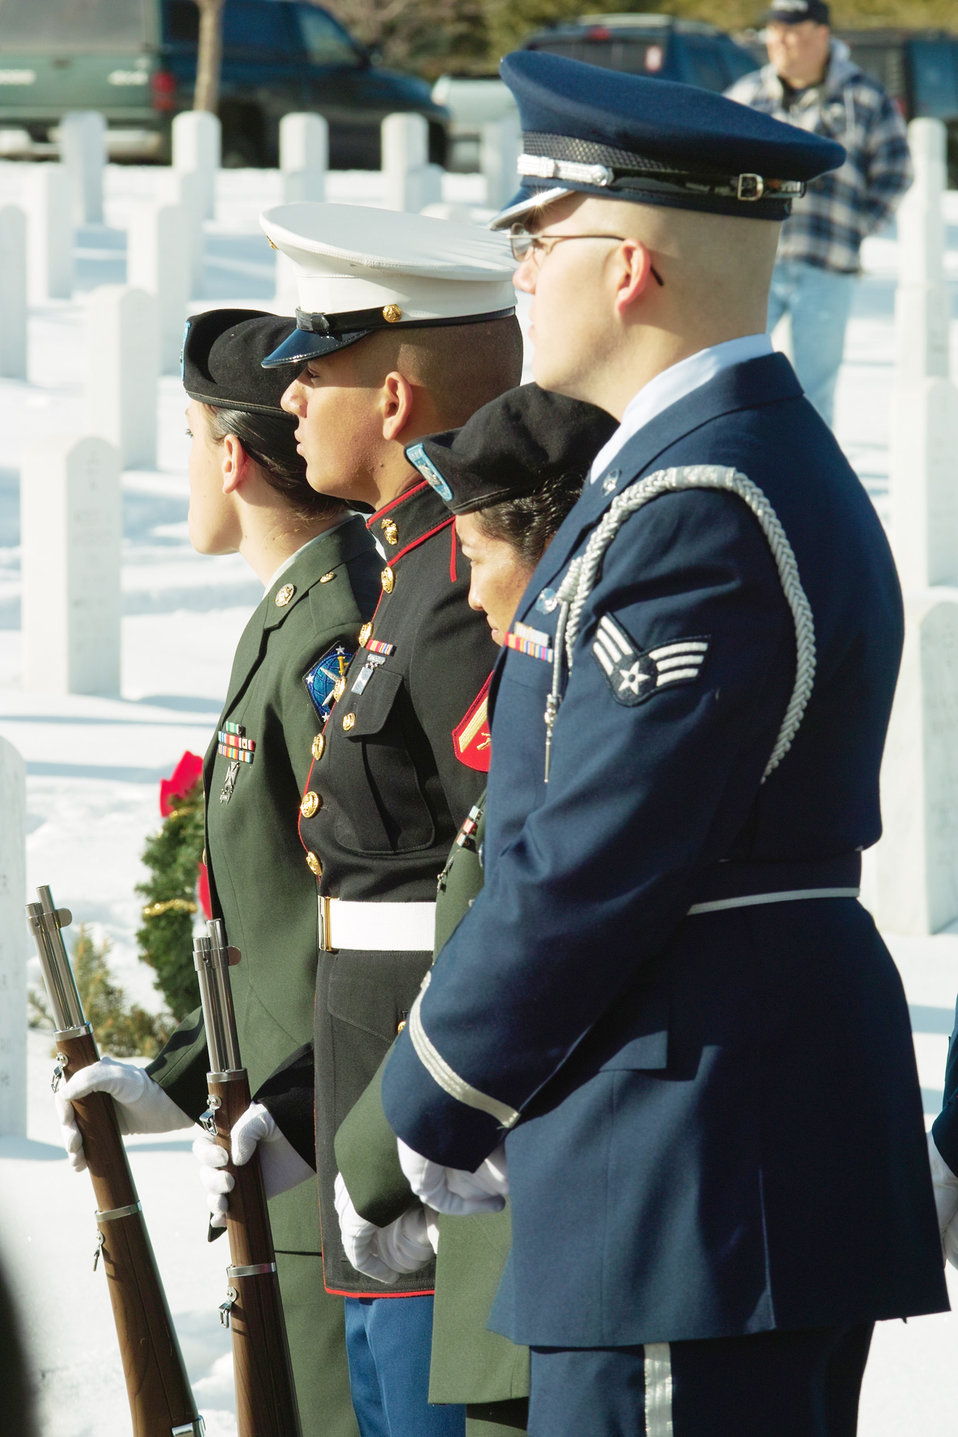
Volunteers honor veterans with wreaths

Members of the Joint Color Guard from the Aerospace Data Facility Colorado at Buckley Air Force Base pause during the veterans' salute during Wreaths Across America Dec. 14, 2009, at Fort Logan National Cemetery, Colo.